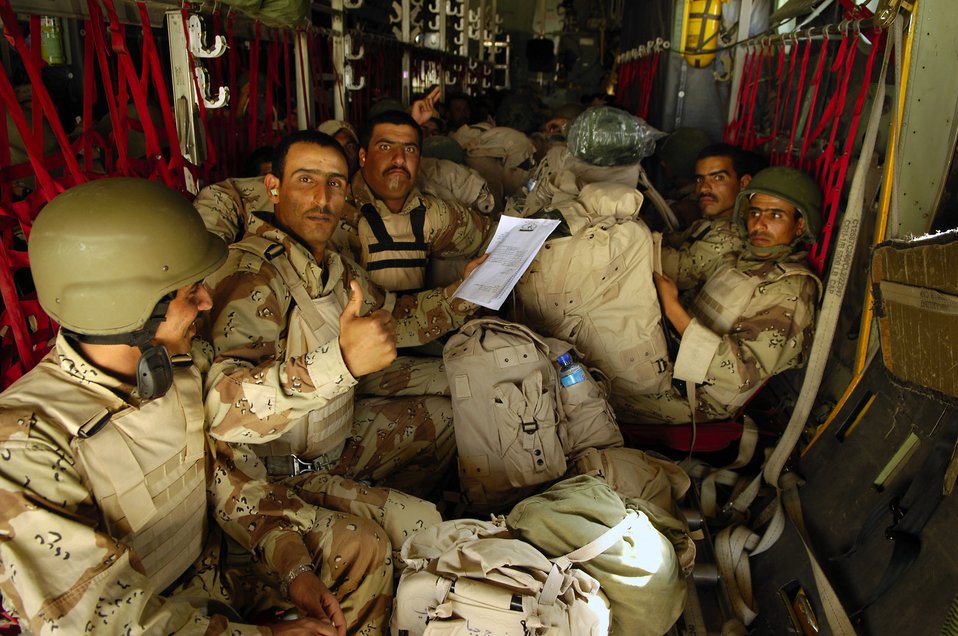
Iraqi air force in the fight

Members of the Iraqi army sit in an Iraqi C-130 Hercules before a March 30 flight to Basra, Iraq, at New Al Muthana Air Base, Iraq. All processing, loading and transporting of the Iraqi troops is being conducted by the Iraqi air force.